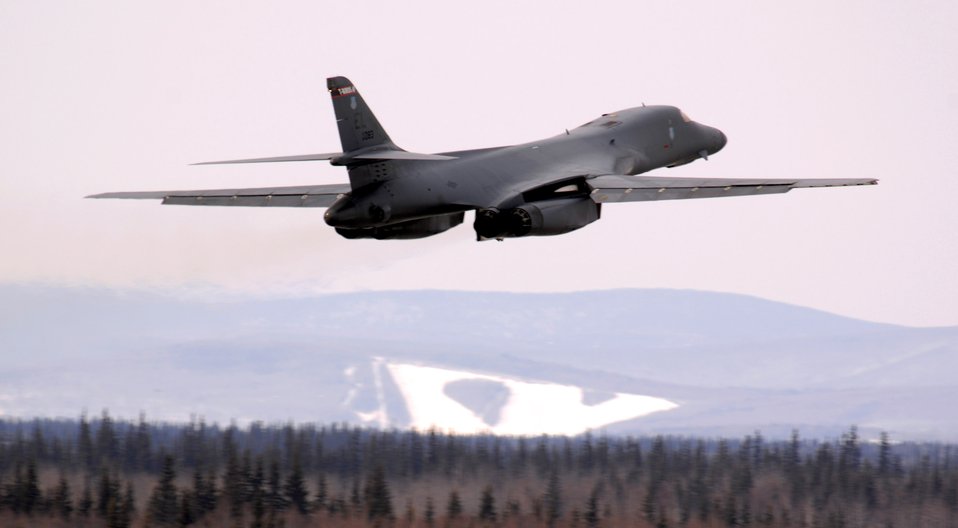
Red Flag-Alaska waves

A B-1B Lancer from Ellsworth Air Force Base, S.D., performs a touch and go before landing for Red Flag-Alaska 07-1 April 3 at Eielson AFB, Alaska. More than 1,300 military members from the United States, France and Australia have gathered here to participate in Red Flag-Alaska 07-1 scheduled April 5 to 21.